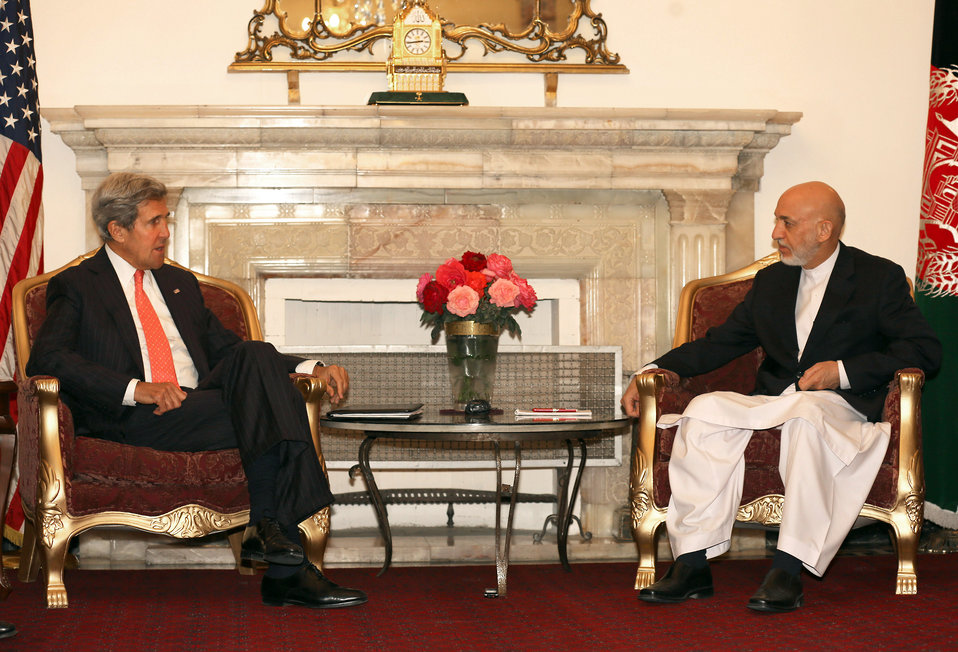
Secretary Kerry Meets With Afghan President Karzai

U.S. Secretary of State John Kerry meets with Afghan President Hamid Karzai at the Presidential Palace in Kabul, Afghanistan, on October 11, 2013.